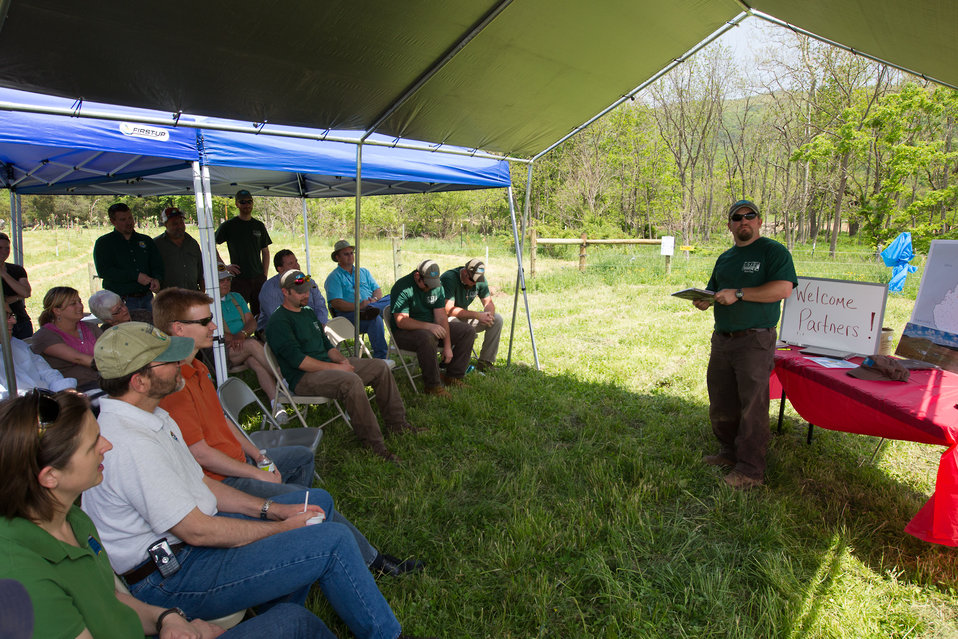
Celebrating 1 Million Feet of Conservation Fence in WV

Partners for Fish and Wildlife Program